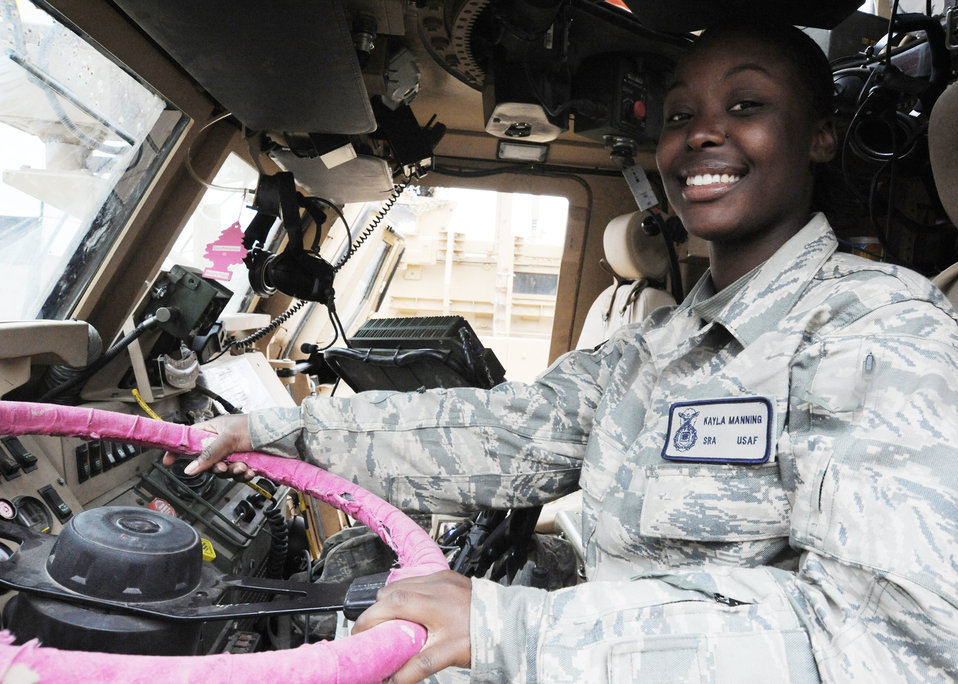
Airman gives new touch to war machine

Senior Airman Kayla Manning sits at the wheel of her mine-resistant, ambush-protected vehicle before heading out on a mission March 27, 2010, at Camp Stryker, Iraq. Airman Manning is from the 732nd Expeditionary Security Forces Squadron, Det. 2.